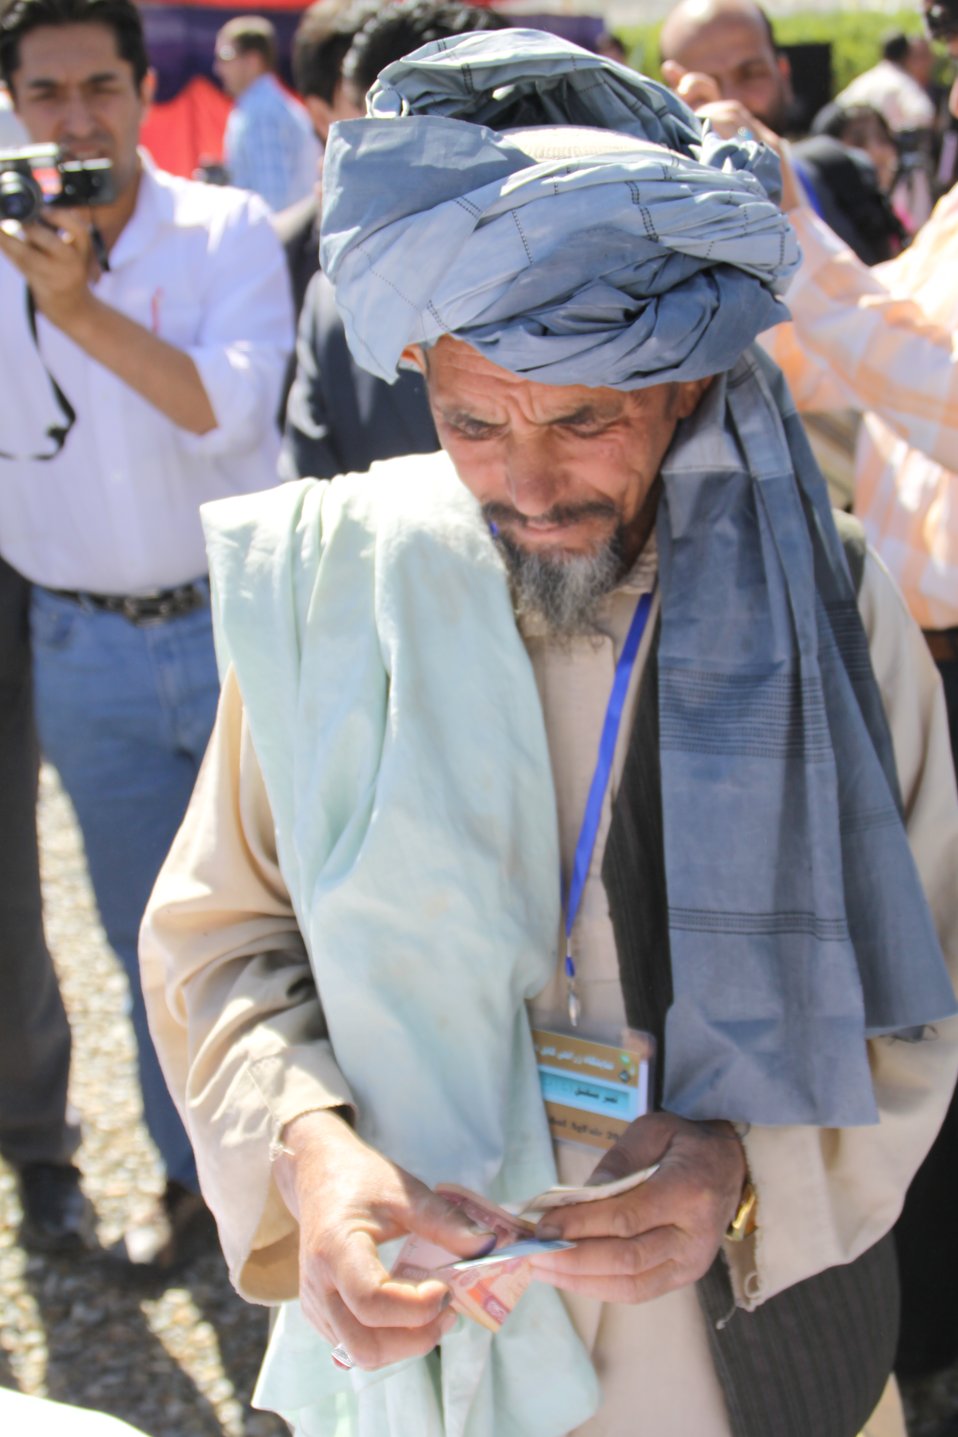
AVIPA Plus Wheat Seed Distribution 101005

US Ambassador Karl Eikenberry and USAID Acting Mission Director Kevin Brownawell joined the Minister of Agriculture, Irrigation and Livestock, H.E. Minister Mohammed Rahimi in signing a Memorandum of Understanding and distributing vouchers to area farmers for wheat and fertilizer.